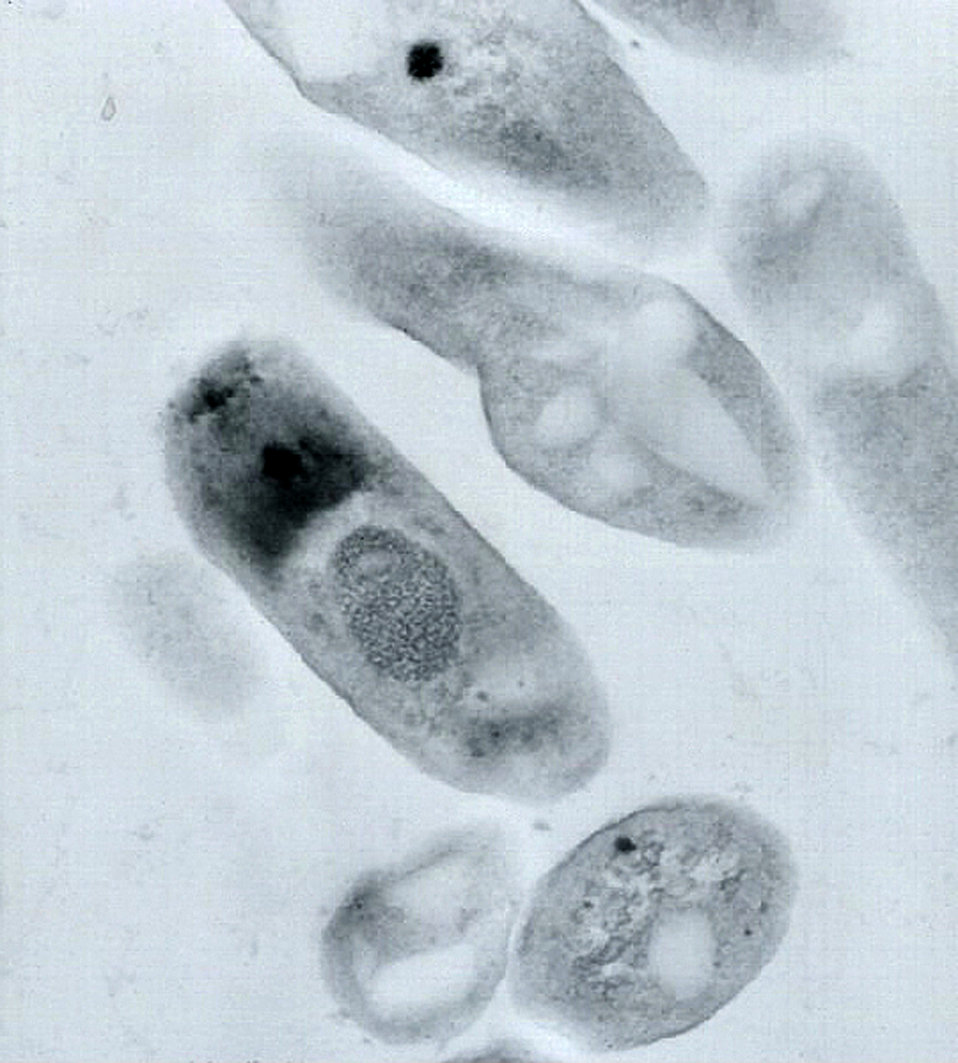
Transmission electron micrograph of Bacillus anthracis.